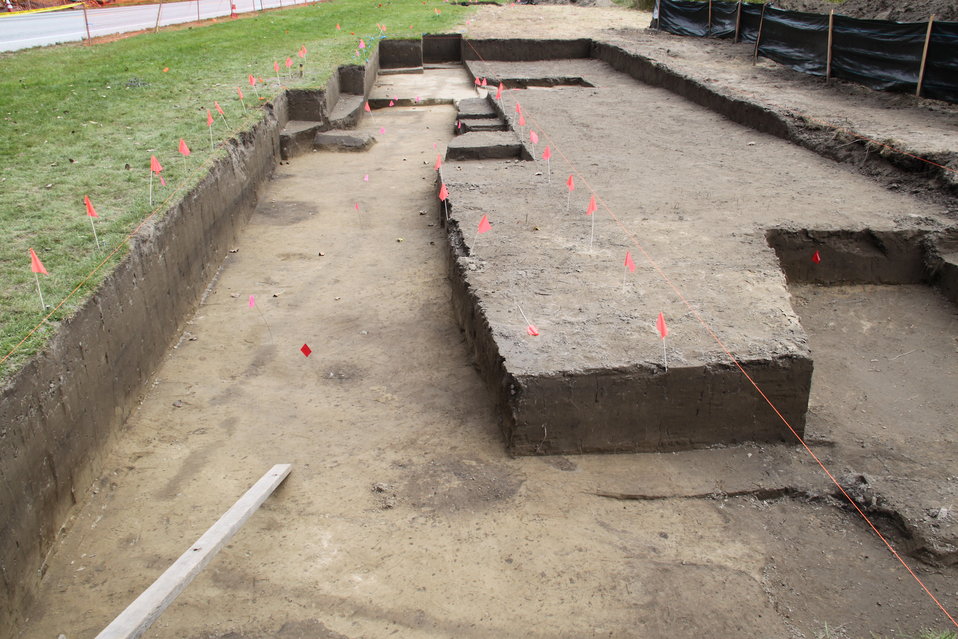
Archaeology on Missisquoi National Wildlife Refuge